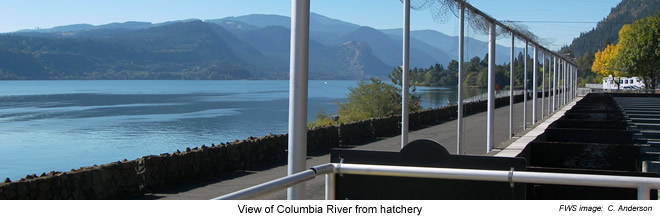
View of Columbia River from Spring Creek NFH